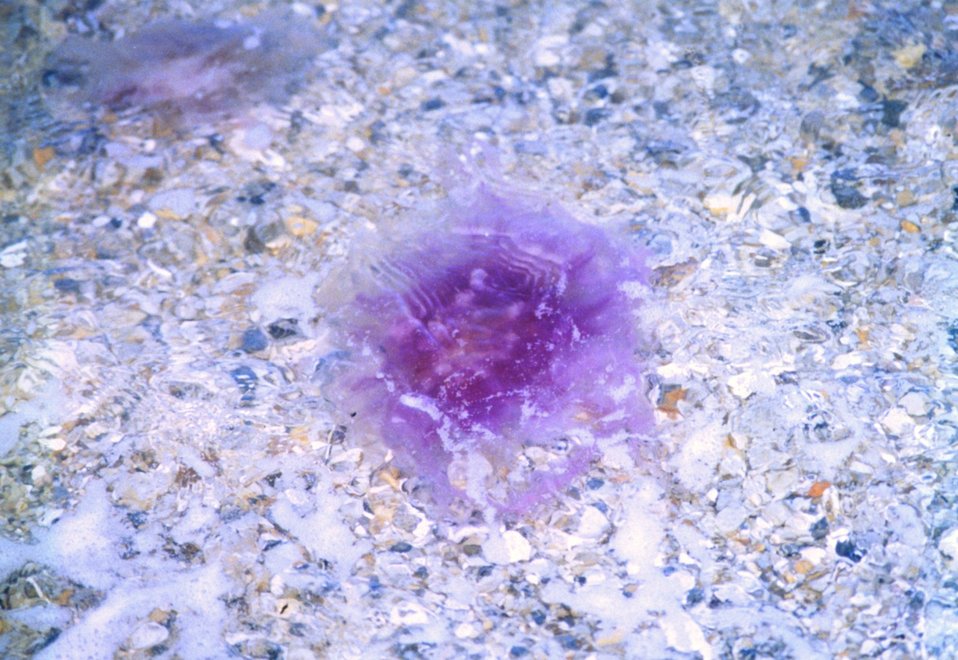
A purple winter nettle in the shallows of the Patuxent River.